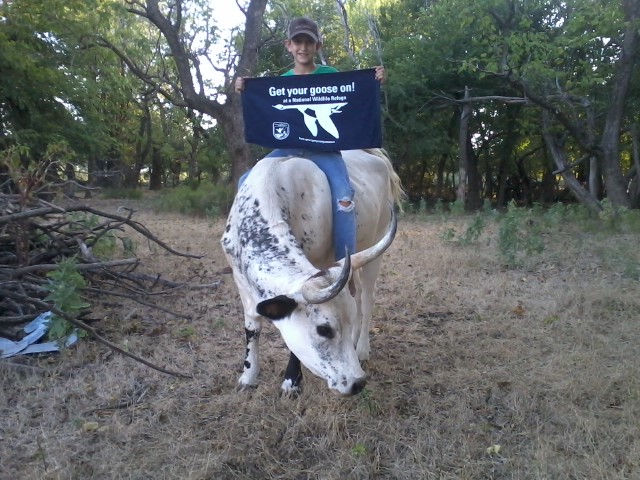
Get Your Goose On!

Wichita Mountains National Wildlife Refuge in Oklahoma.